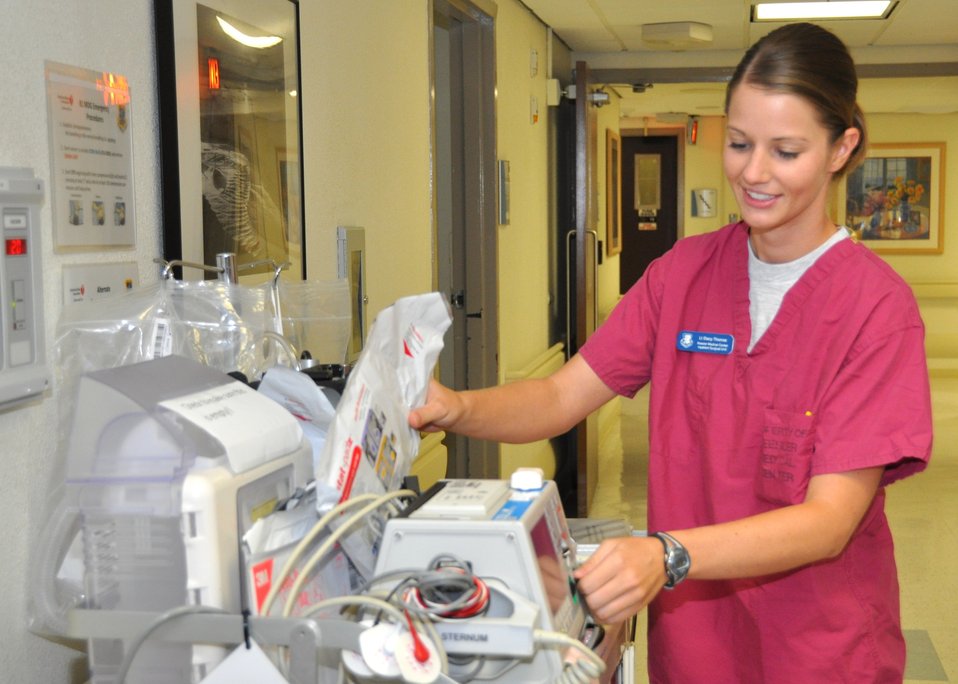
Keesler nurse thwarts robbery of elderly lady

Second Lt. Stacy Thomas, an 81st Inpatient Operations Squadron surgical inpatient unit clinical nurse, checks the equipment on a medical inpatient unit crash cart May 29, 2012, at the Keesler Hospital at Keesler Air Force Base, Miss. Thomas recently helped thwart a would-be purse snatcher at William Carey University when she noticed an elderly woman hitting a man in the parking lot.